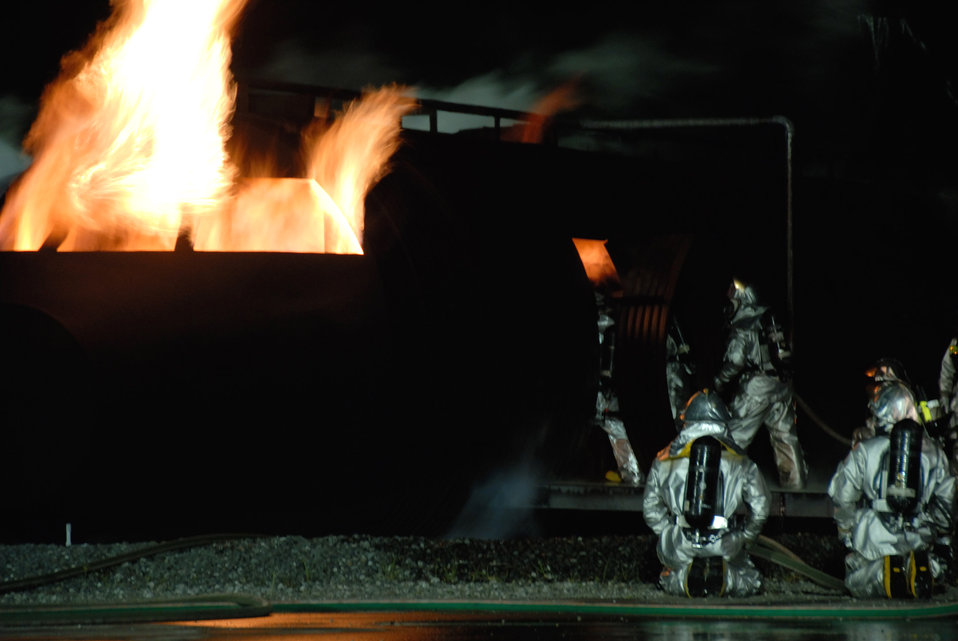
Blazing demonstration

Firefighters from the 35th Civil Engineer Squadron work to put out a blaze on an aircraft fire trainer during Fire Prevention Week Oct. 9 at Misawa Air Base, Japan. The 35th CES annually demonstrates firefighting procedures for base residents.